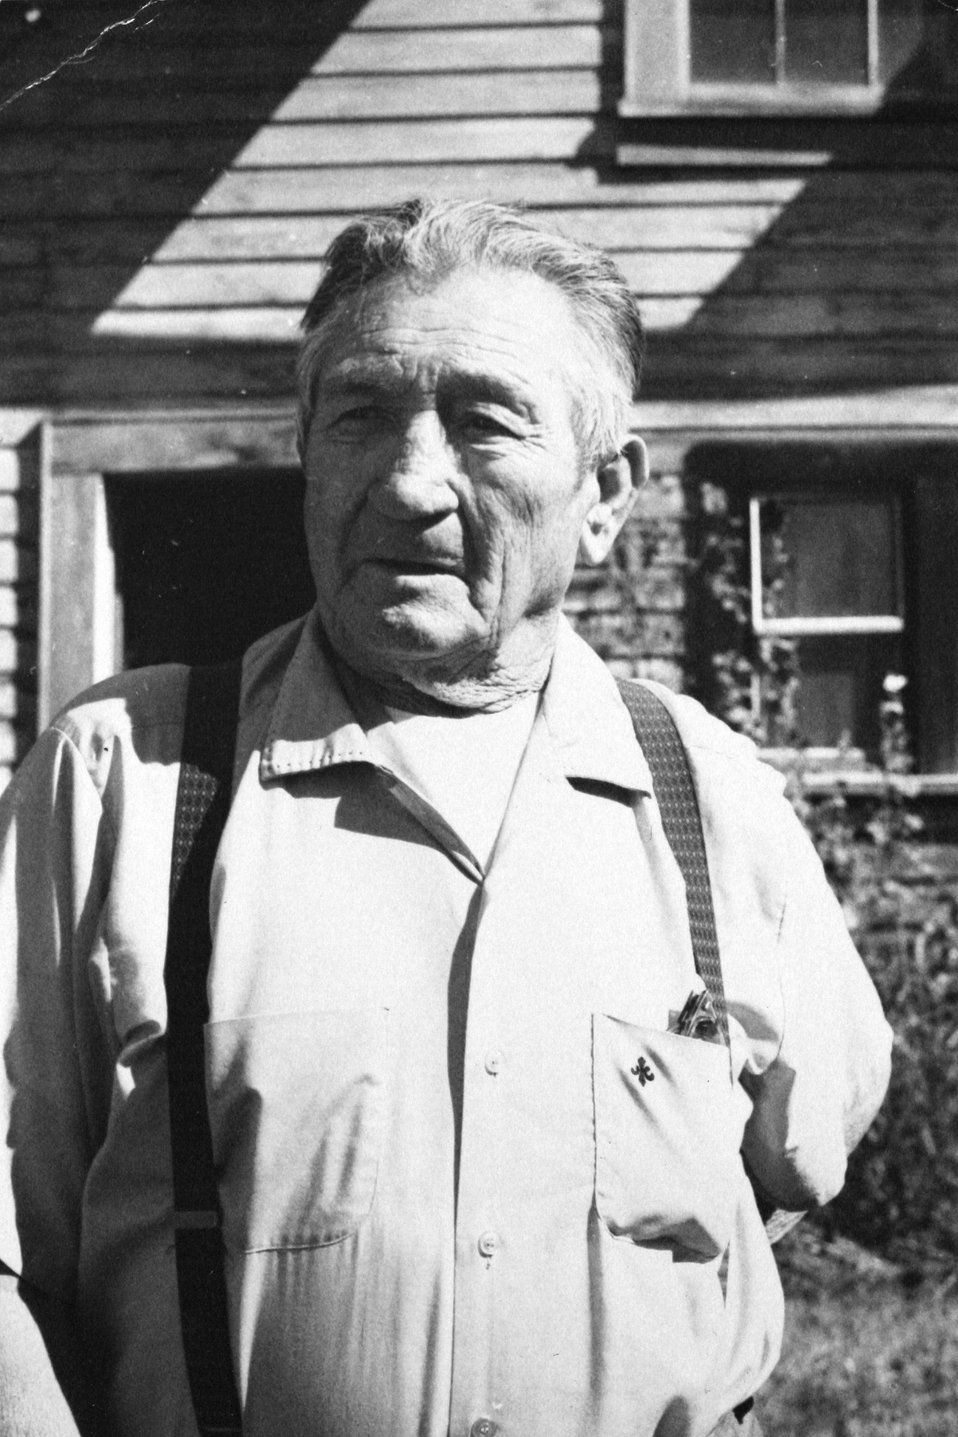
Frank Thorton